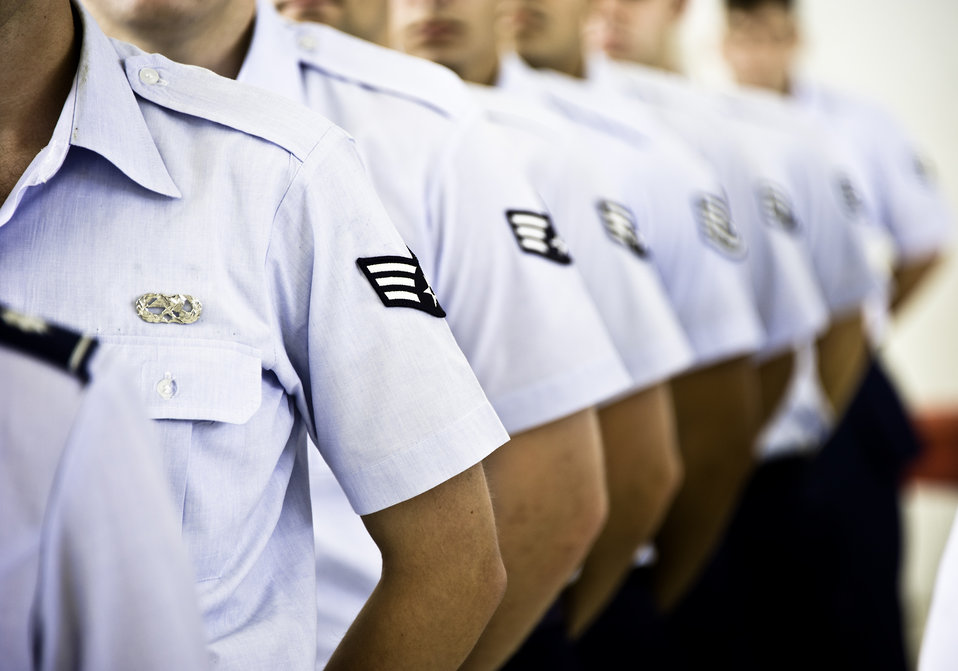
Parade rest!

Airmen from the 53rd Electronic Warfare Group stand at parade rest July 26, 2011, during the 53rd Wing change of command at Eglin Air Force Base, Fla.